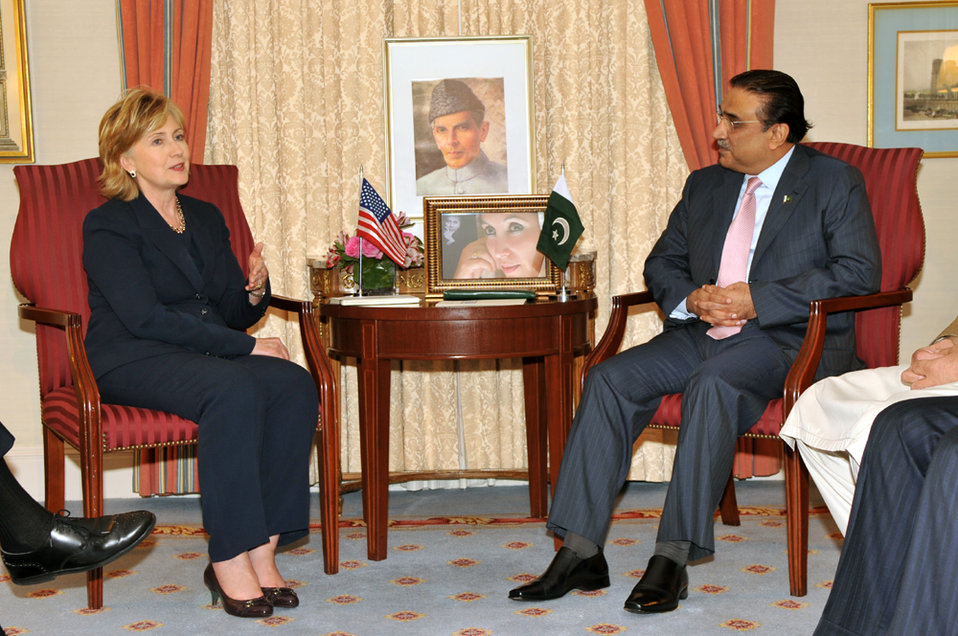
UNGA 2009: Secretary Clinton Meets With Pakistani President

U.S. Secretary of State Hillary Rodham Clinton meets with Pakistani President Asif Ali Zardari at the Waldorf Astoria hotel during the 64th Session of the UN General Assembly in New York City, New York September 24, 2009.